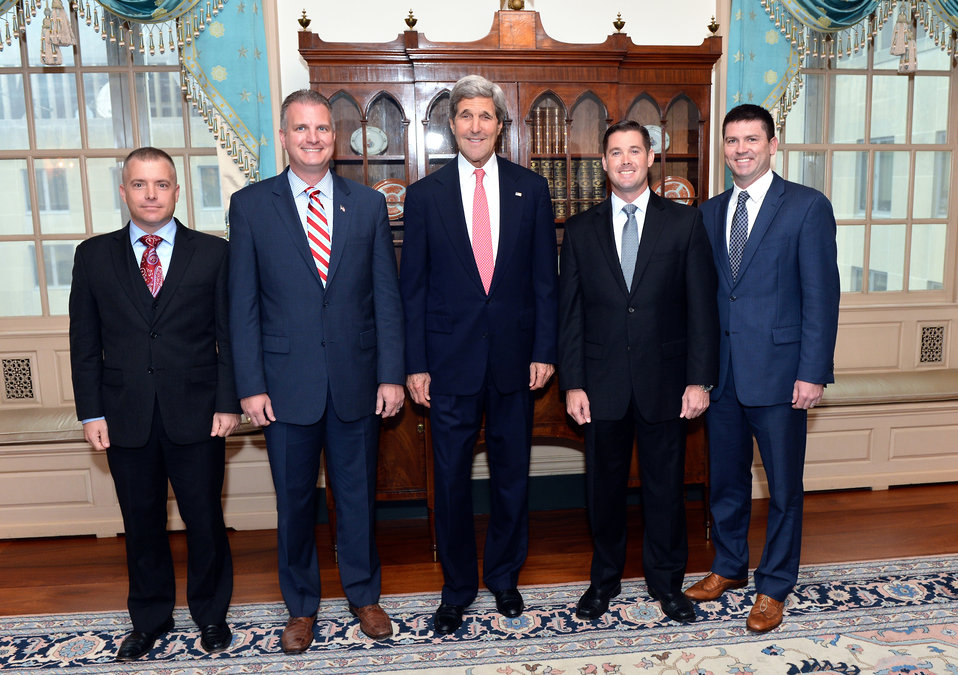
Secretary Kerry Poses for a Photo With Departing U.S. Air Force Fellows

U.S. Secretary of State John Kerry poses for a photo with departing U.S. Air Force Fellows at the U.S. Department of State in Washington, D.C., on May 29, 2014.